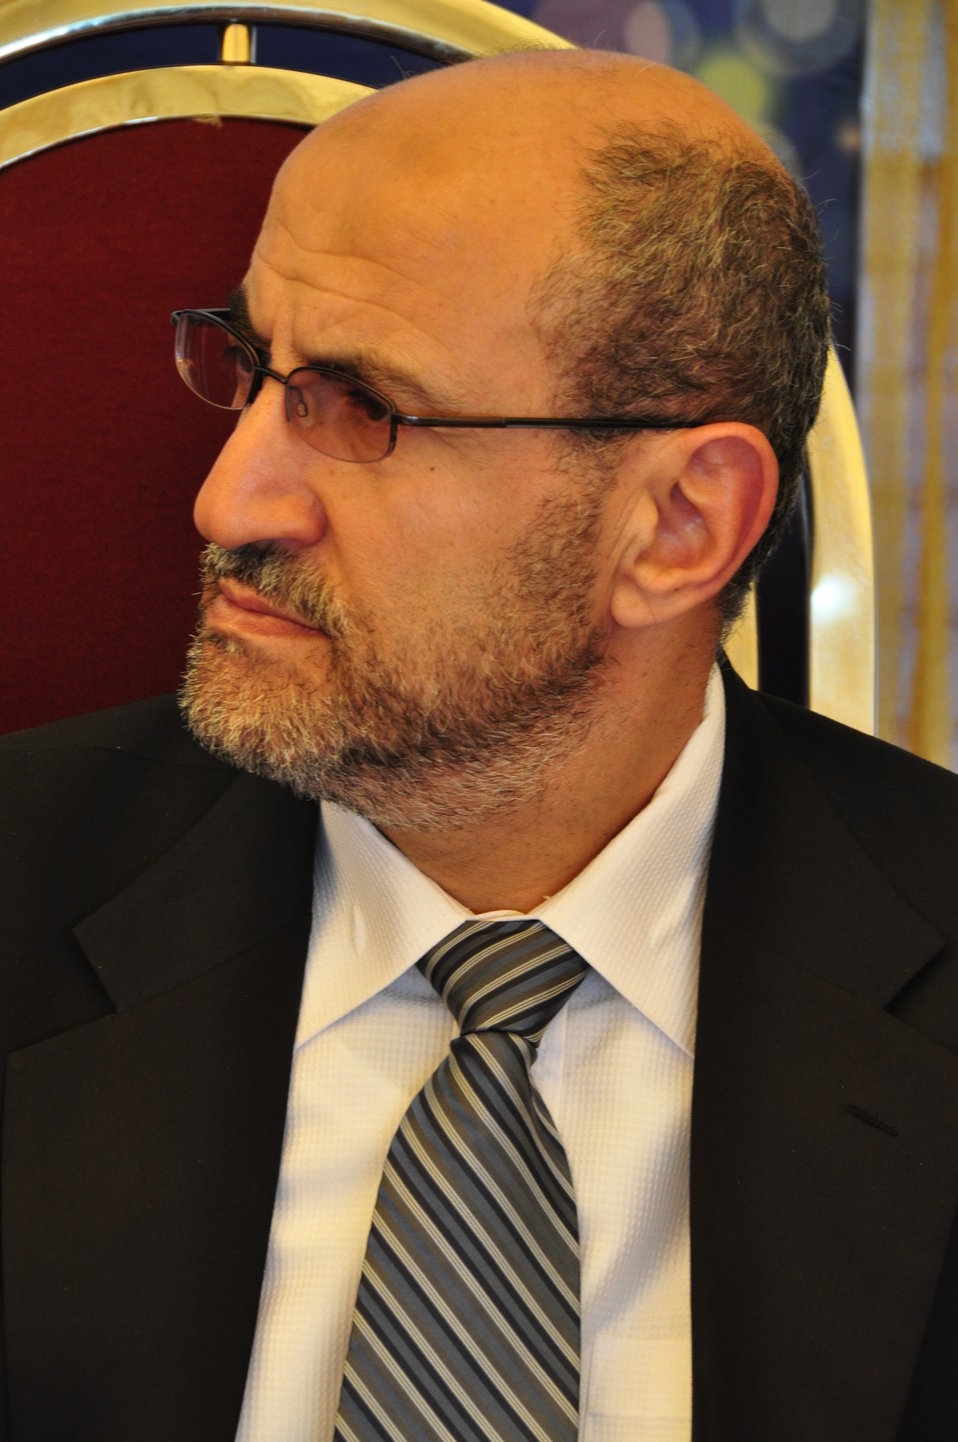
Dhirkot Reconstructed Hospital Inauguration Pakistan Reconstruction Program 09